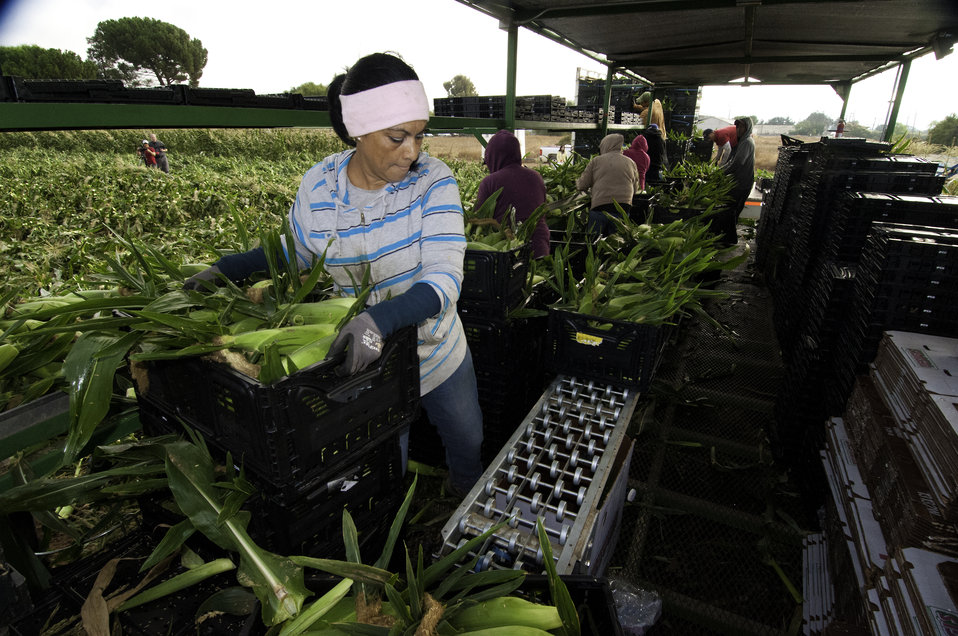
Migrant workers harvest corn on Uesugi Farms in Gilroy, CA on Wednesday, Aug. 28, 2013.